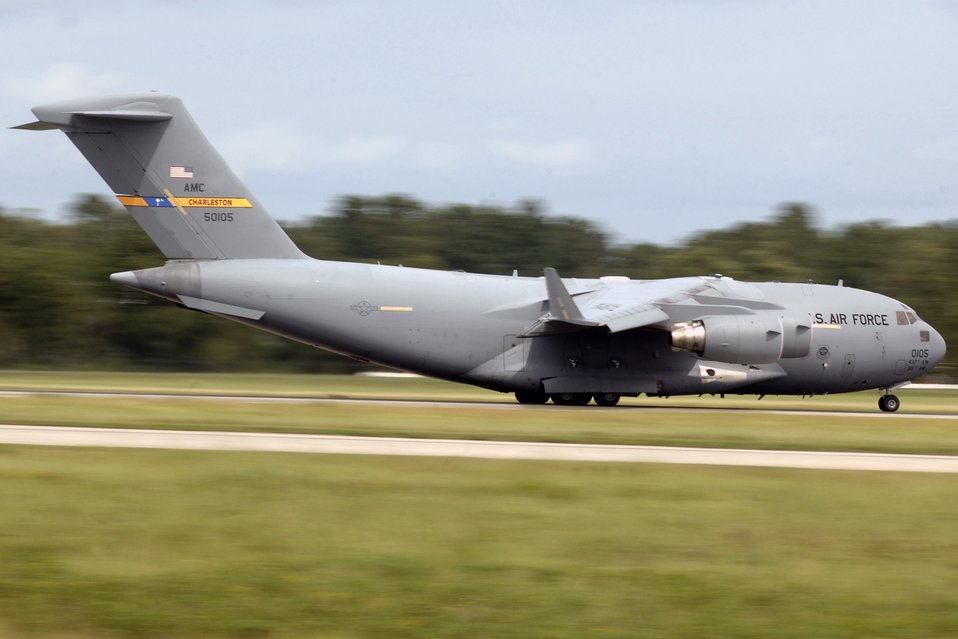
Aircraft evacuated from Charleston

A C-17 takes off from Charleston Air Force Base, S.C., Aug. 30. Airmen from Charleston AFB are in the process of evacuating all operational C-17 Globemaster III aircraft on station due to impending severe weather expected from Tropical Storm Ernesto.